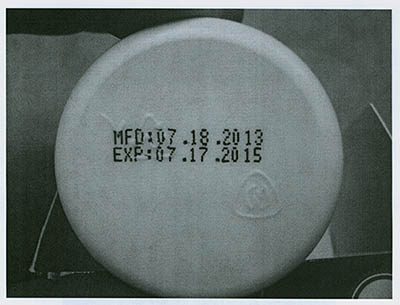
RECALLED – Dietary Supplement

December 23, 2013 – Product Recall – Deseo Rebajar Inc. Issues Voluntary Recall of Burn 7 Capsules Due to Undeclared Active Ingredient.